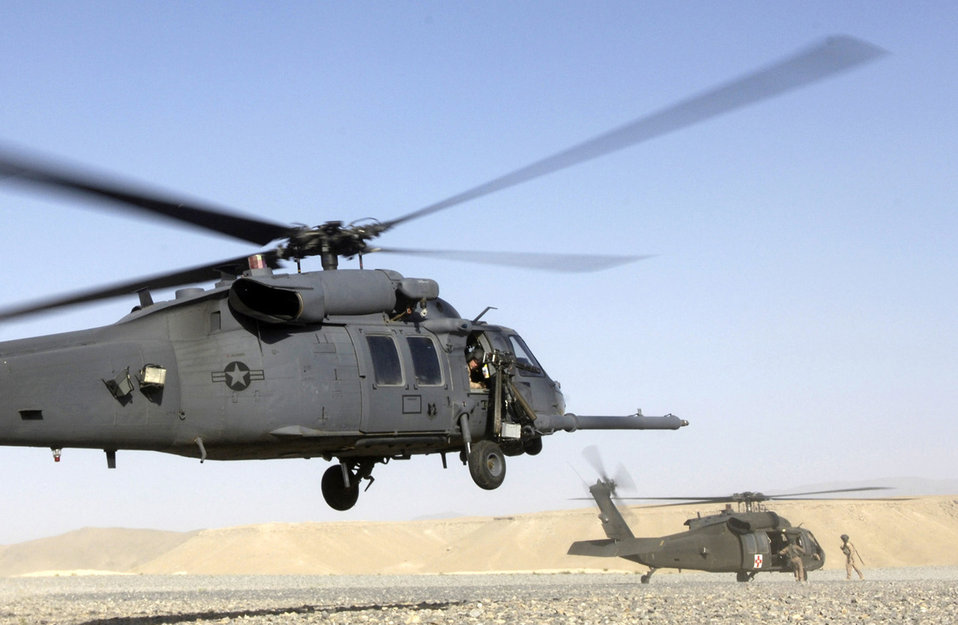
HH-60 transports medevac patients

An HH-60G Pave Hawk helicopter lands as an Army UH-60 Black Hawk prepares to pick up a medivac patient. The HH-60G is a twin-engine medium-lift helicopter used in combat search and rescue missions.